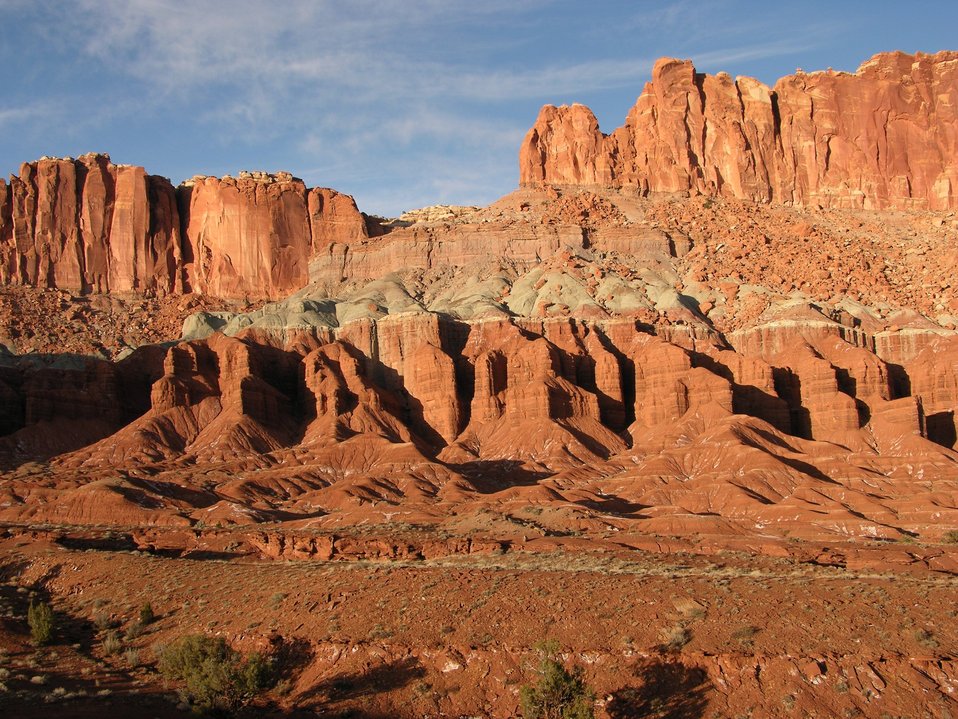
Erosion of red sandstone